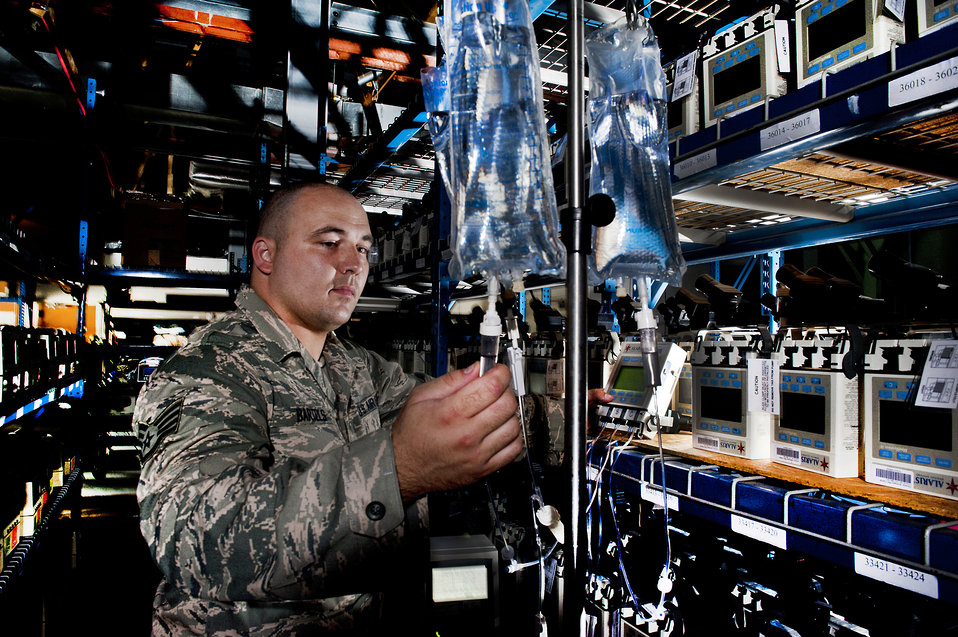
Medical

Staff Sgt. Erick Bartels uses an Alaris Medsystem III infusion pump to check the flow of liquid on lines of IV bags at Joint Base Andrews, Md., Aug. 15, 2012. Bartels is a biomedical equipment technician assigned to the Medical Logistics Flight of the 779th Medical Support Squadron.